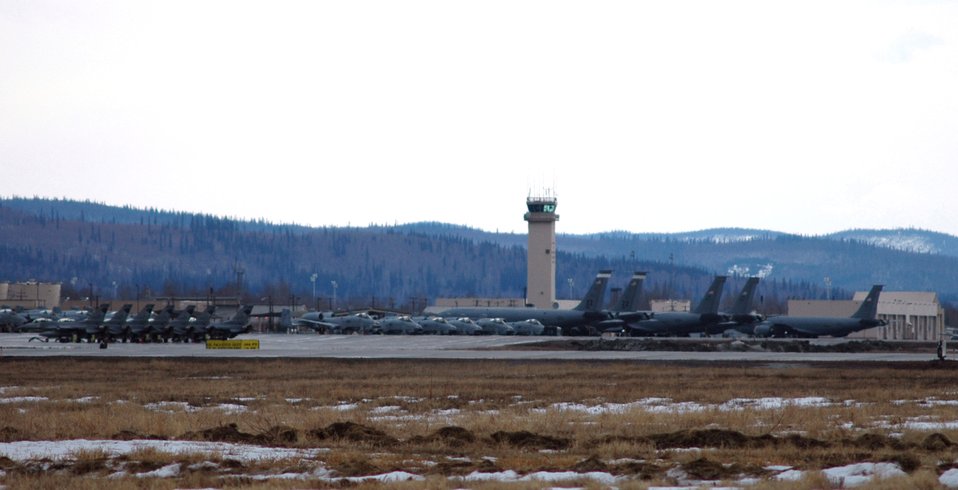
Missions begin with ATO

The ramp at Eielson Air Force Base, Alaska, is full as aircrews wait for the air tasking order to